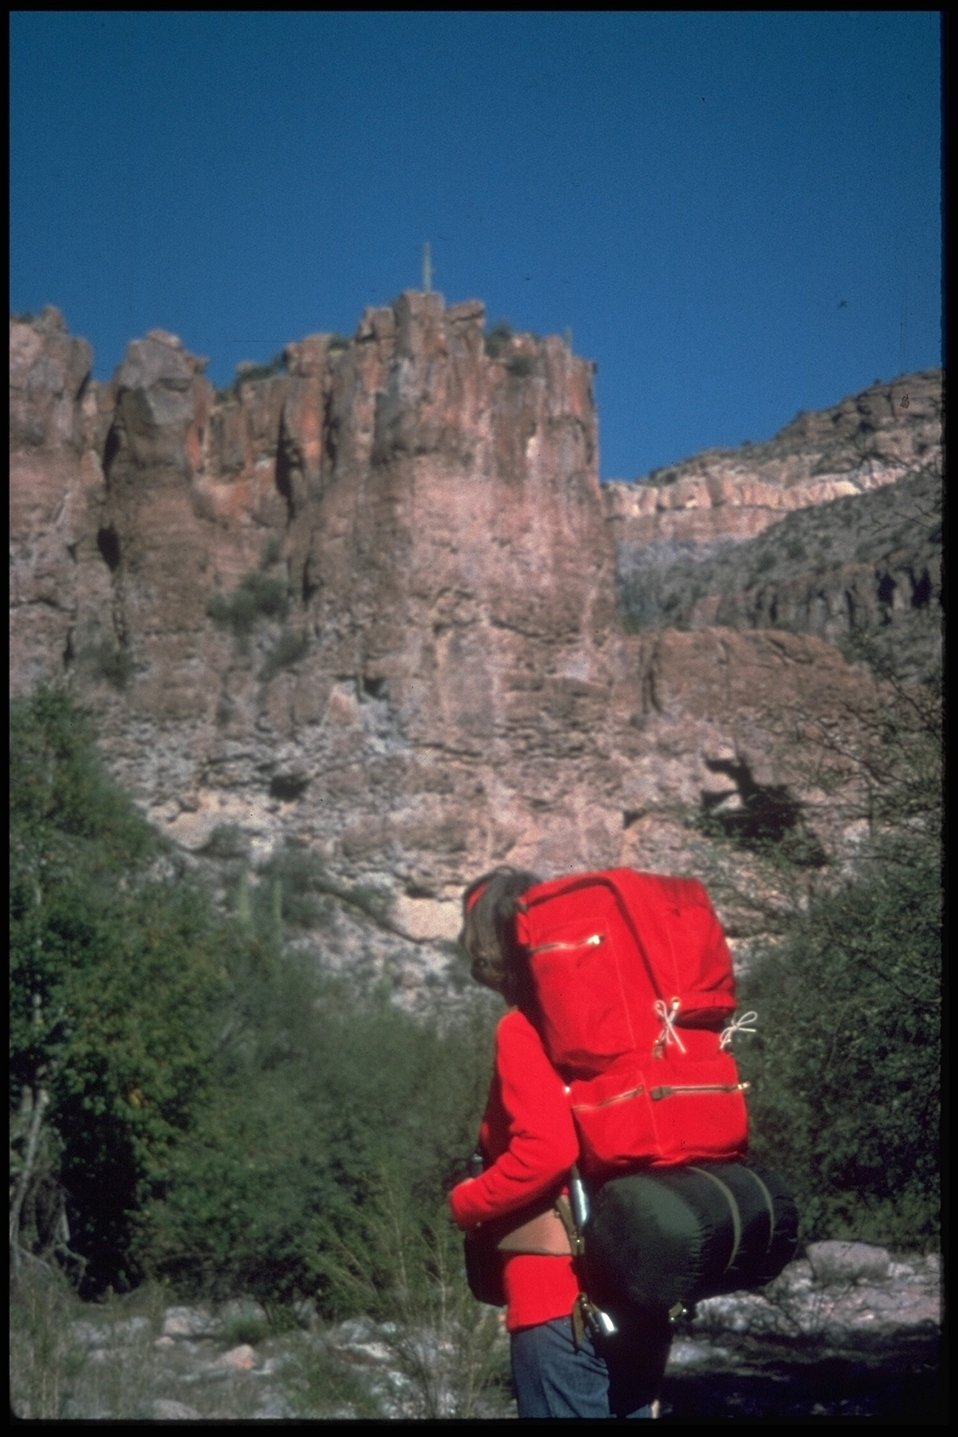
There are many beautiful areas to hike in the BLM's lands in Arizona.